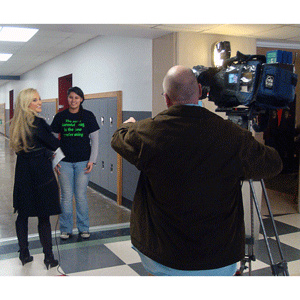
NDFW 2014: Kansas Coverage

Go KFP! Kansas Family Partnership sent a Lawrence High School press release and pitch email about National Drug Facts Week Events to its Lawrence media contacts on Lawrence High School’s activities, the national campaign and KFP’s social media campaign, which resulted in coverage from 6 News Lawrence, KS.